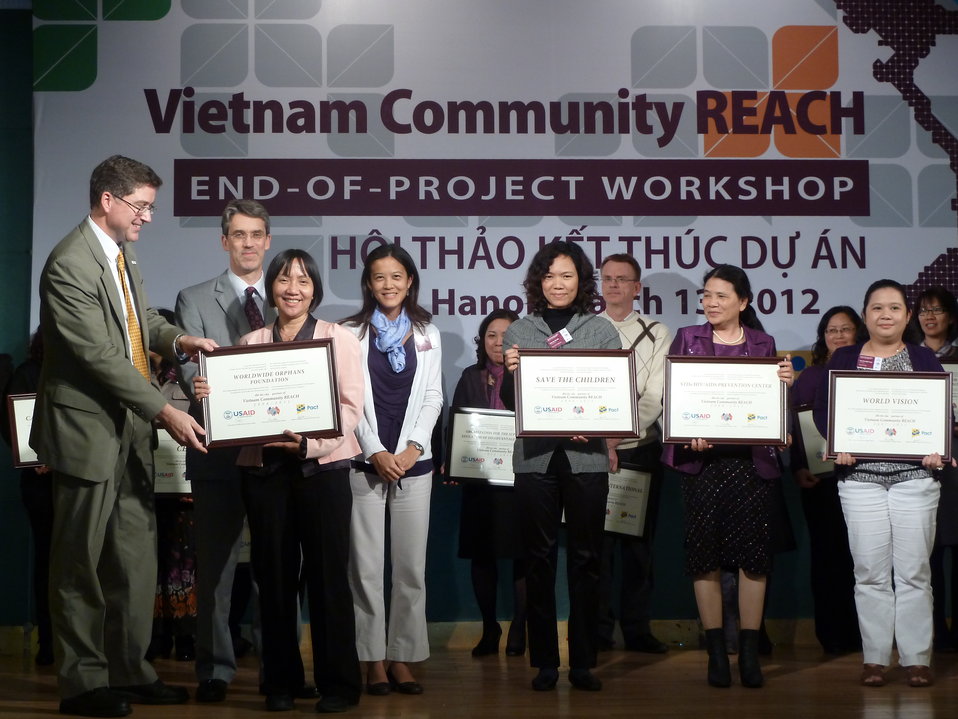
USAID, PEPFAR, and Pact award certificates to local and international partners for their work in addressing HIV in Vietnam

Community REACH project close-out with USAID and implementing partner, Pact